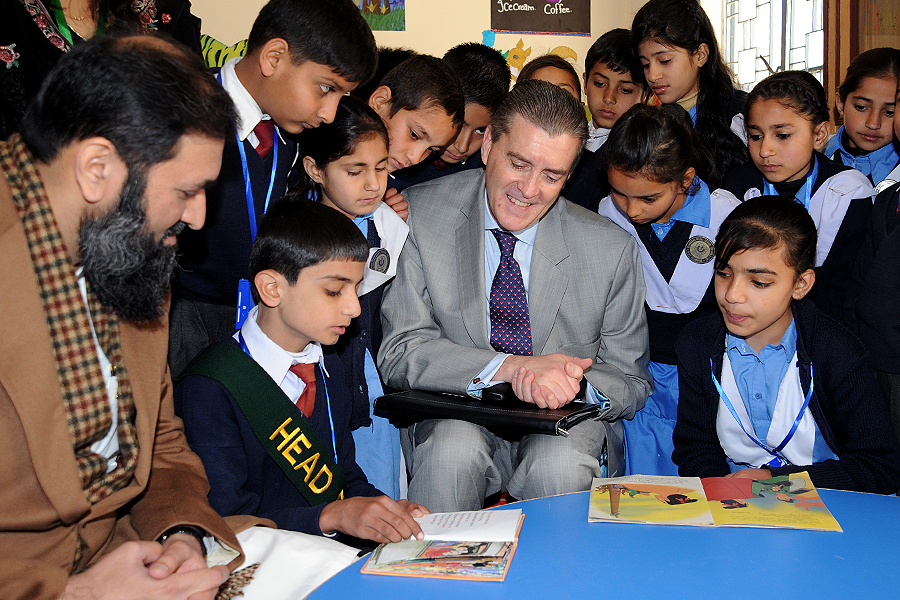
U.S. Ambassador to Pakistan Richard G. Olson, U.S. Ambassador at Large for Global Women’s Issues Catherine Russell, and State Minister for Education, Training, and Standards in Higher Education Baligh-ur-Rehman launched the Pakistan Reading Project today, marking the beginning of a five year, $160 million investment in reading education in Pakistan.